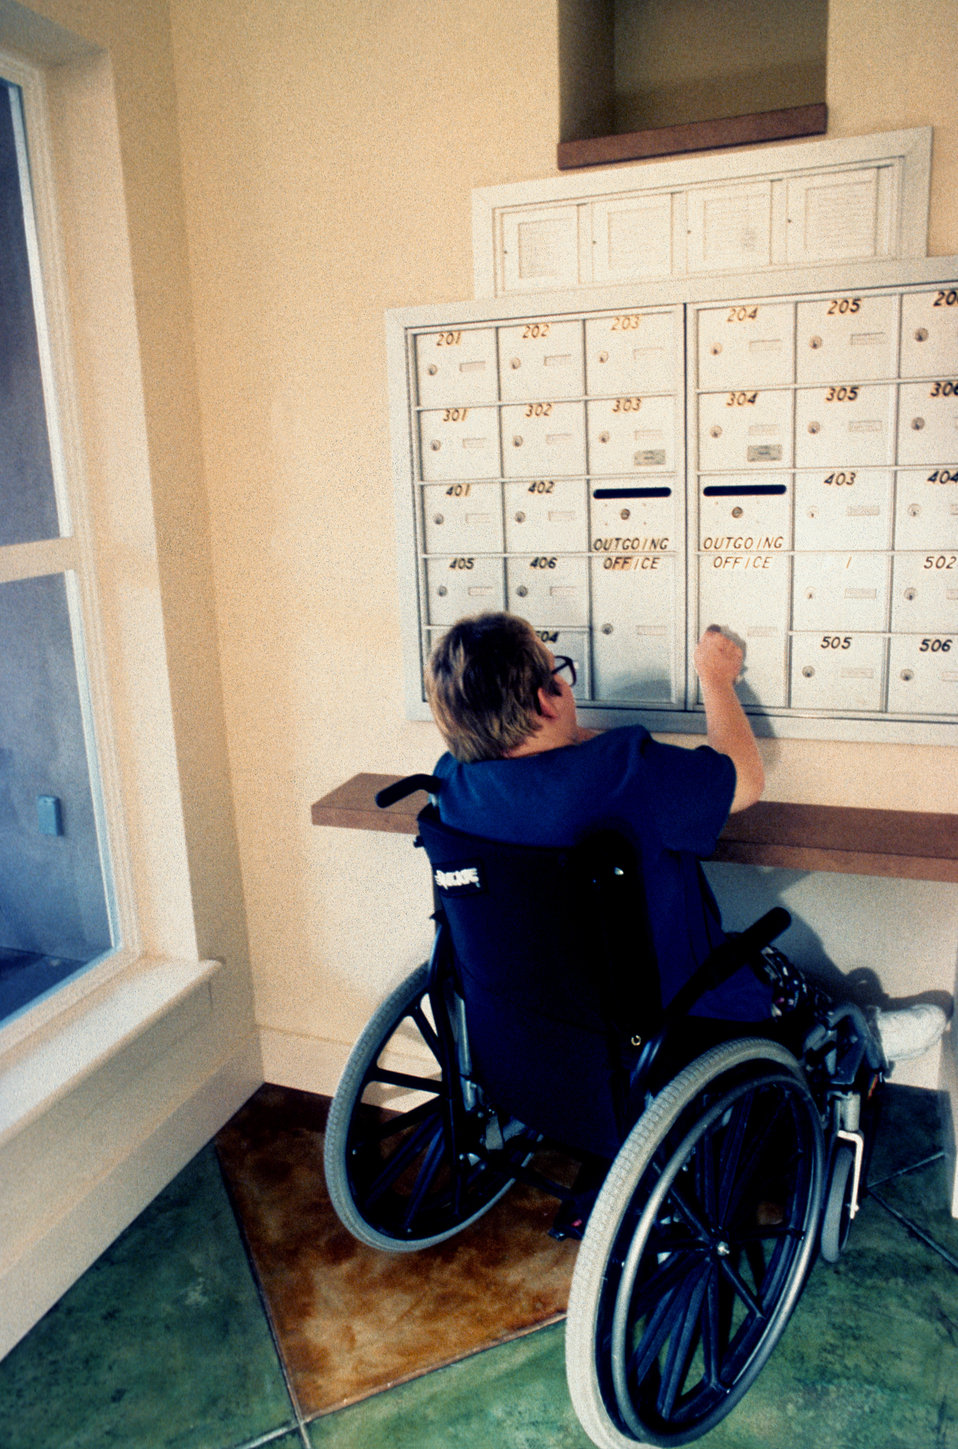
In this 1997 image, a man seated in a wheelchair was shown accessing a bank of mailboxs, which had been designed so that the lowest row of boxes was at a level, which placed them within easy reach for those who were of shorter stature, or as was the case here, someone seated in a wheelchair. Features such as accessible mailboxes are critical components when creating accessible public spaces in multifamily housing.'The Center for Universal Design (CUD) is a national information, technical assistance, and research center that evaluates, develops, and promotes accessible and universal design in housing, commercial and public facilities, outdoor environments, and products.'